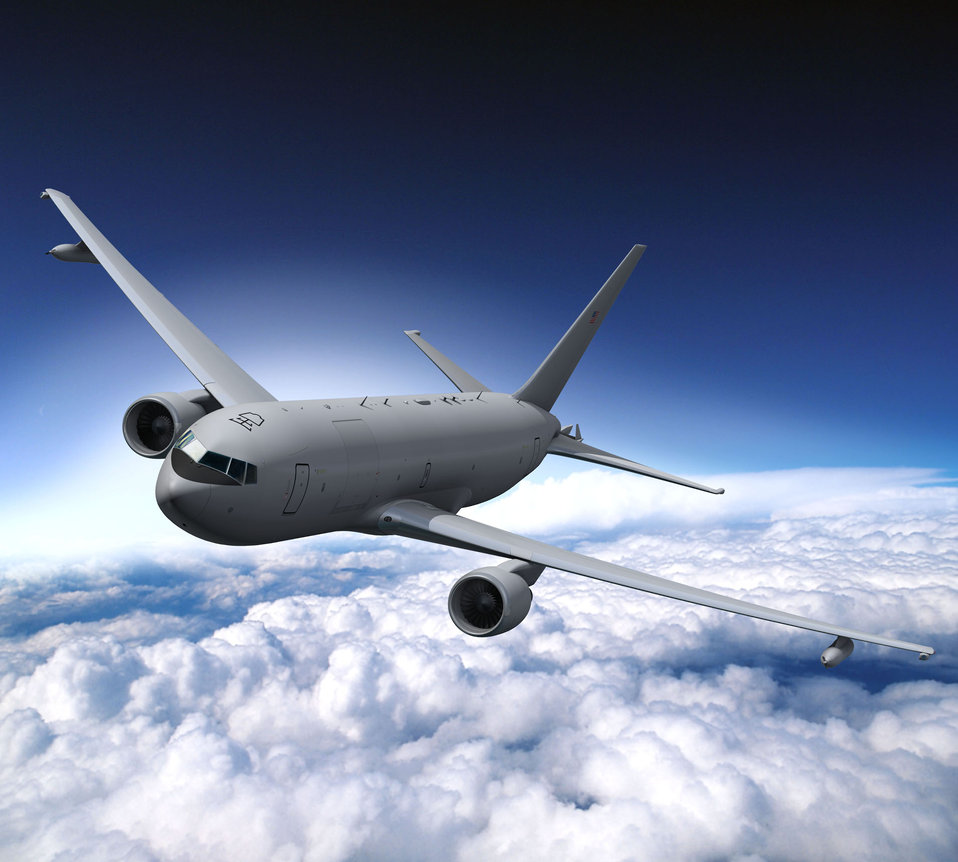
KC-46A

The KC-46A is intended to replace the United States Air Force's aging fleet of
KC-135 Stratotankers and provides vital air refueling capability for the
United States Air Force.